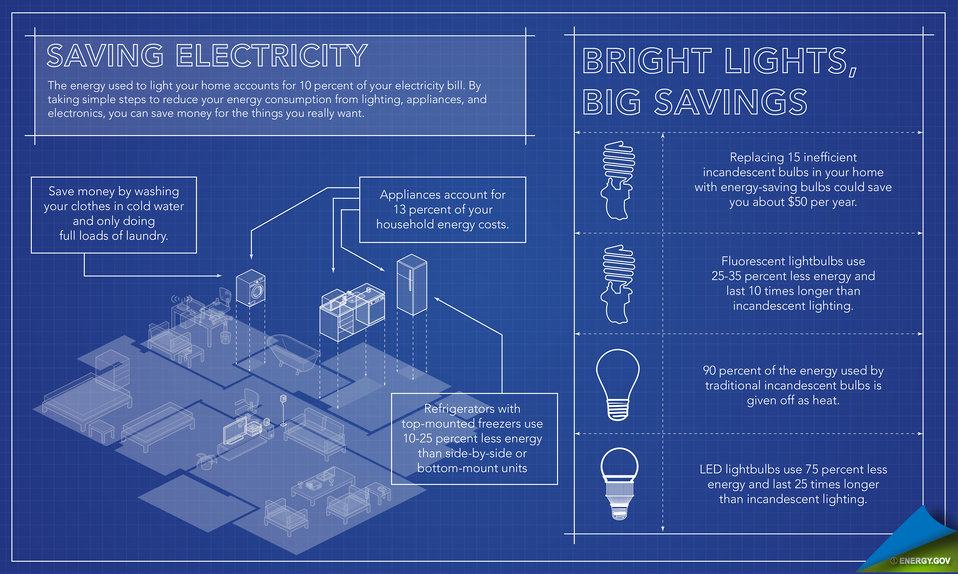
The Energy Efficient Home: Saving Electricity